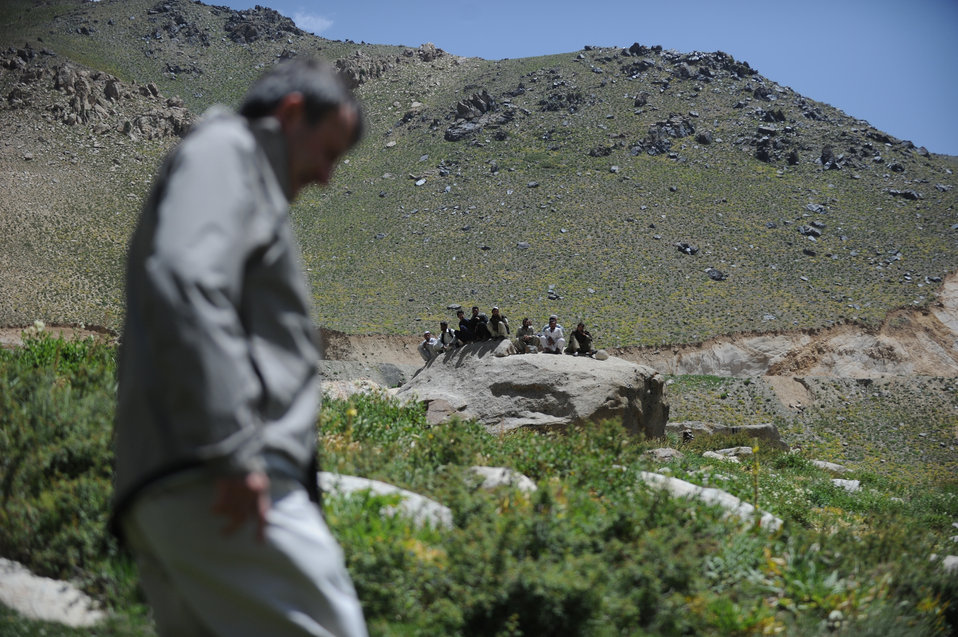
A group of Afghan men watch as U.S. Ambassador Karl W. Eikenberry visits the Salang Tunnel on the border of Parwan and Baghlan Provinces, Afghanistan, on Wednesday, June 15, 2011. (S.K.Vemmer/Department of State)